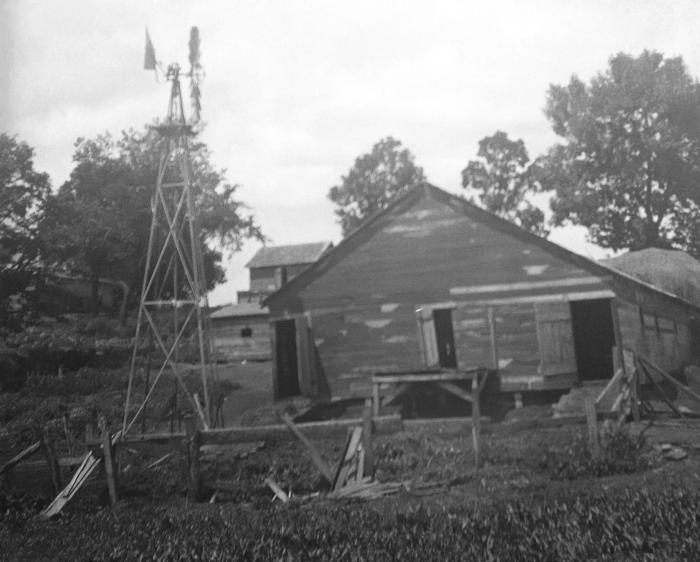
Depicted in this historic image, was an improperly constructed 'driven' well on the grounds of an early twentieth-century farm home located in Minnesota. Taken in 1909, it was one of a series of instructional photos used by the Minnesota Board of Health to train public health workers.